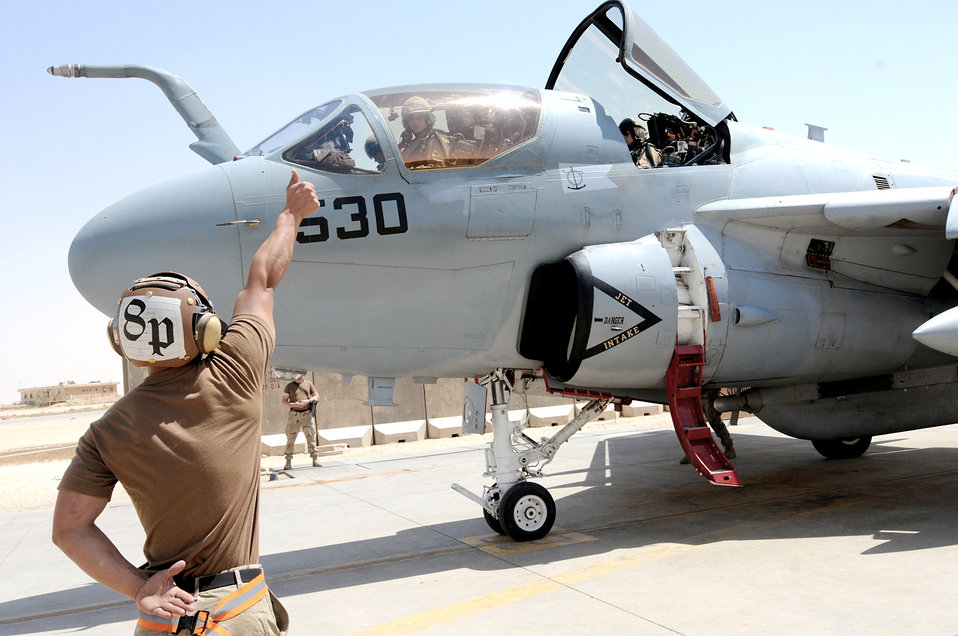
Electronic warfare officers showcase joint effort in Iraq

Navy maintenance crews signal the pilot during pre-flight checks as an A6B-Prowler with the Navy's Electronic Attack Squadron 133 prepares to launch April 29, 2010, at Al Asad Airfield, Iraq. The Navy land-based squadron is one of three currently flying the A6B with Air Force electronic warfare officers. The joint warfighters are conducting aerial overwatch operations for convoys at Al Asad. The Air Force officers are assigned to the 366th Fighter Wing at Mountain Home Air Force Base, Idaho, and work with their counterparts at Naval Air Station Whidbey Island, Wash., in the 388th Electronic Combat Squadron.